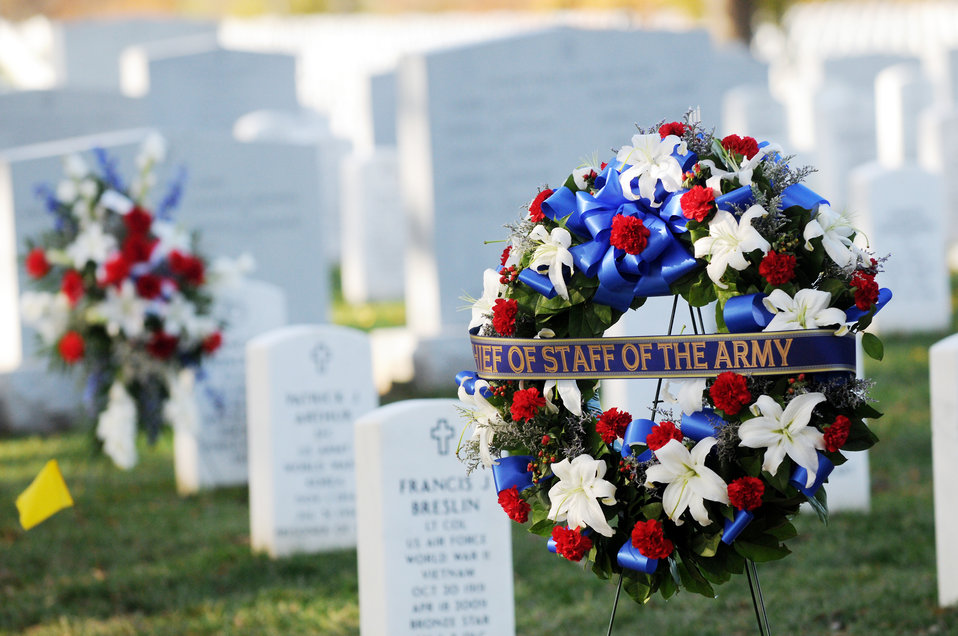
Funeral highlights search for missing servicemembers

A wreath is dislpayed at an internment ceremony for seven members of the World War II B-25 crew that were lost Dec. 5, 1942, near Papua, New Guinea.